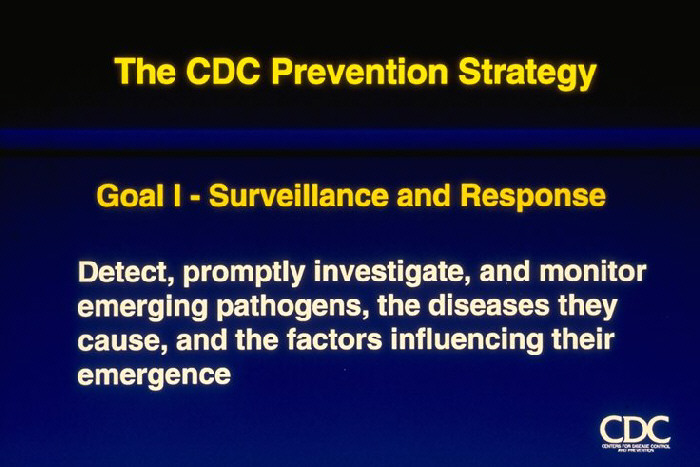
The CDC Prevention Strategy: Goal I--Surveillance and Response (text)